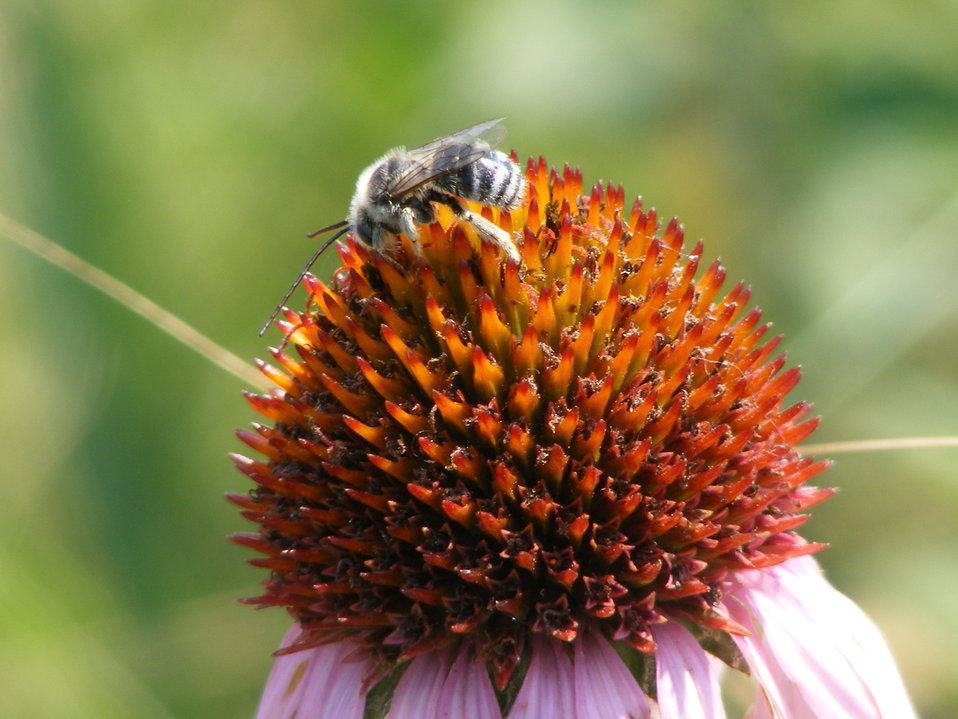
A Grocery Store for Insects

A bee gets nutrition from a purple coneflower, a common flower in good quality native prairie. Many different types of insects can be found on coneflowers, including bees, spiders, and butterflies. Photo was taken on a Waterfowl Production Area in Waubay Wetland Management District.